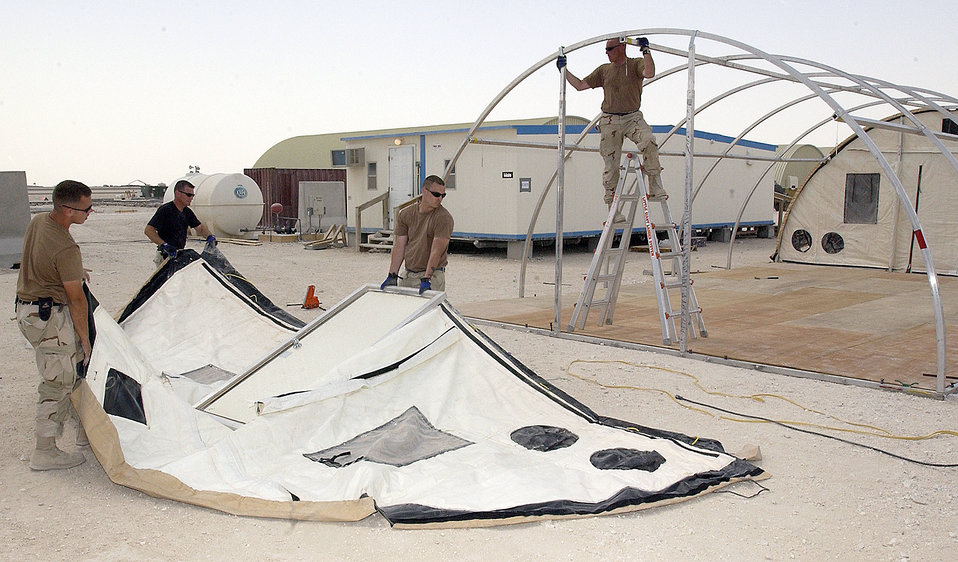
If you build it, they will come

SOUTHWEST ASIA -- (Left to right) Airman 1st Class Brandon Brayley, Tech. Sgt. Tom Stevens and Staff Sgts. Gary Garhammer and George Barnes erect a shelter at a forward-deployed location. The Airmen are assigned to the 379th Expeditionary Civil Engineer Squadron.